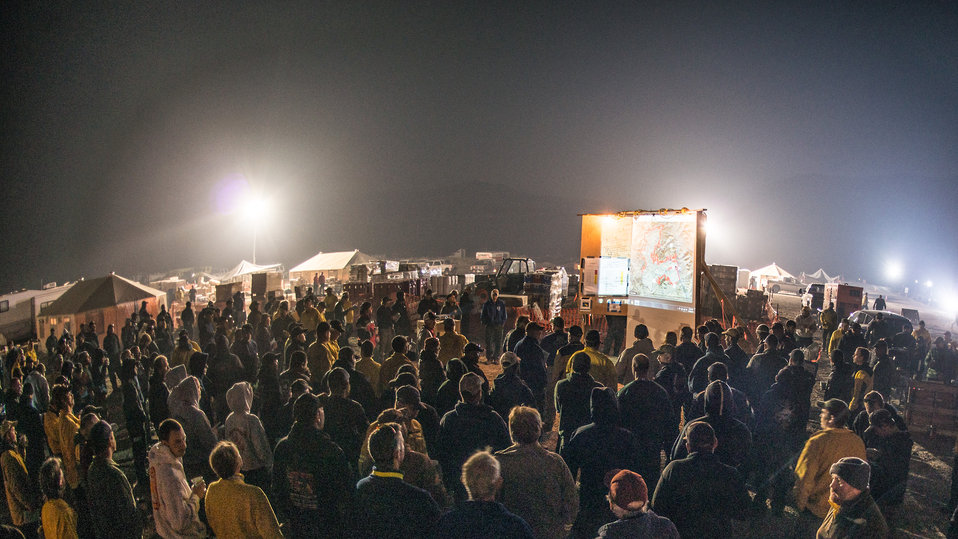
Leadership and fire crews at the morning briefing, in front of the Incident Command Post organizational tents, listen to representatives from all the major operational areas present useful information, recaps of the night shift's work, and what is planned for their 12-hour work day, at the Beaver Creek Fire, west of Hailey, ID, at 6 AM, on Tuesday, Aug 20, 2013. The morning winds have brought the fire's smoke into the camp.